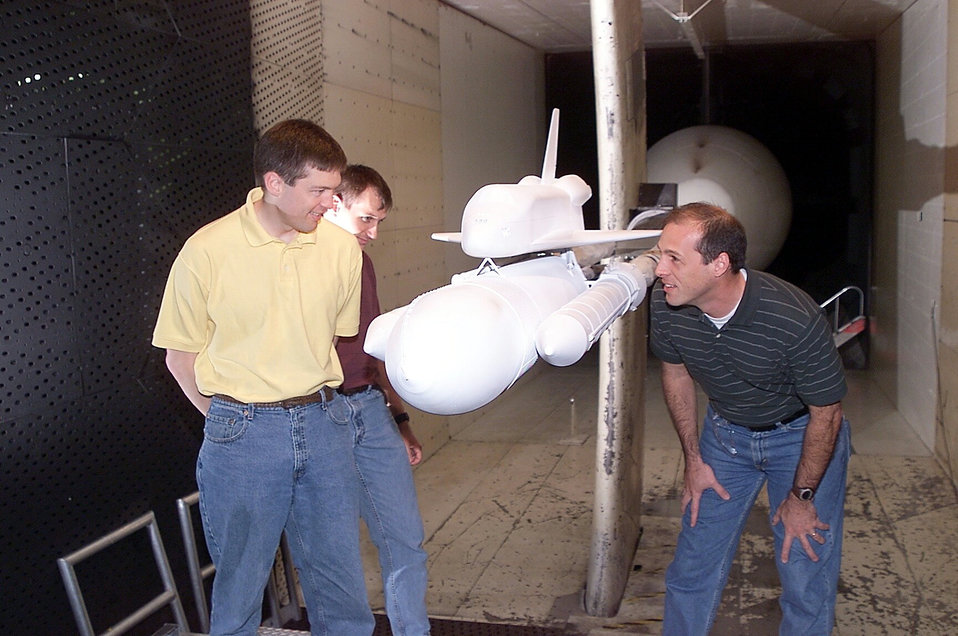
Arnold AFB linked to space shuttle return-to-flight program

ARNOLD AIR FORCE BASE, Tenn. -- (From left) Jim Greathouse, Darby Vicker and Bob Ess examine a space shuttle model during a model change in the 16-foot transonic wind tunnel at the Arnold Engineering Development Center here. Mr. Greathouse and Mr. Vicker are computational fluid dynamics analysts, and Mr. Ess is a program manager. They are from NASA's Johnson Space Center in Houston.